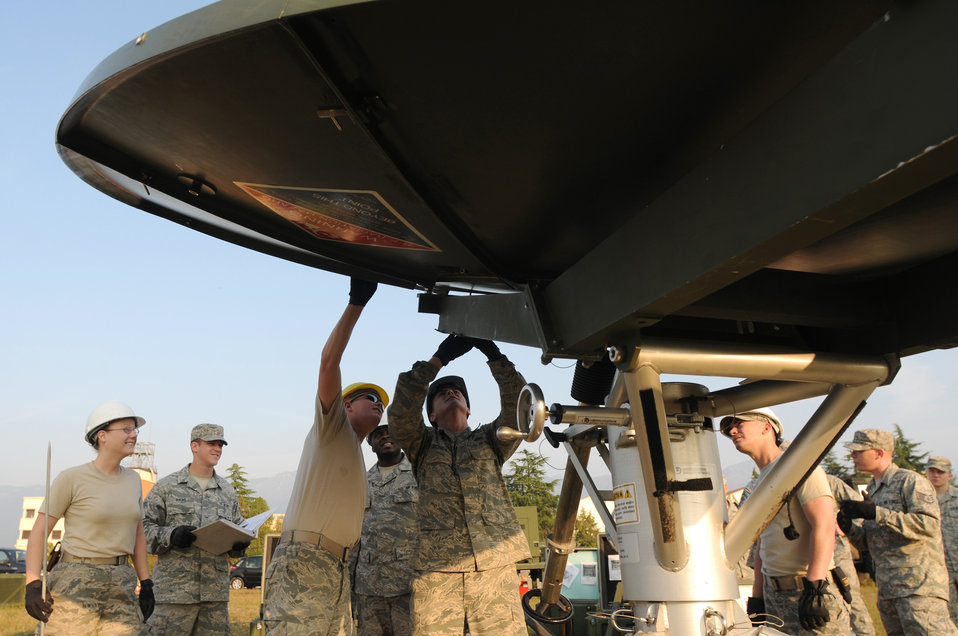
Comm Training

Staff Sgt. Nathan Bonds (center), a radio maintainer with the 1st Combat Communications Squadron at Ramstein Air Base, Germany, locks a panel into place on a satellite dish Sept. 22, 2009, during a training exercise at Aviano AB, Italy. Fellow radio and satellite communications Airmen gather around to observe as the two career fields undergo cross-flow training in preparation for their upcoming merger to a new transmission systems career field in October 2009.